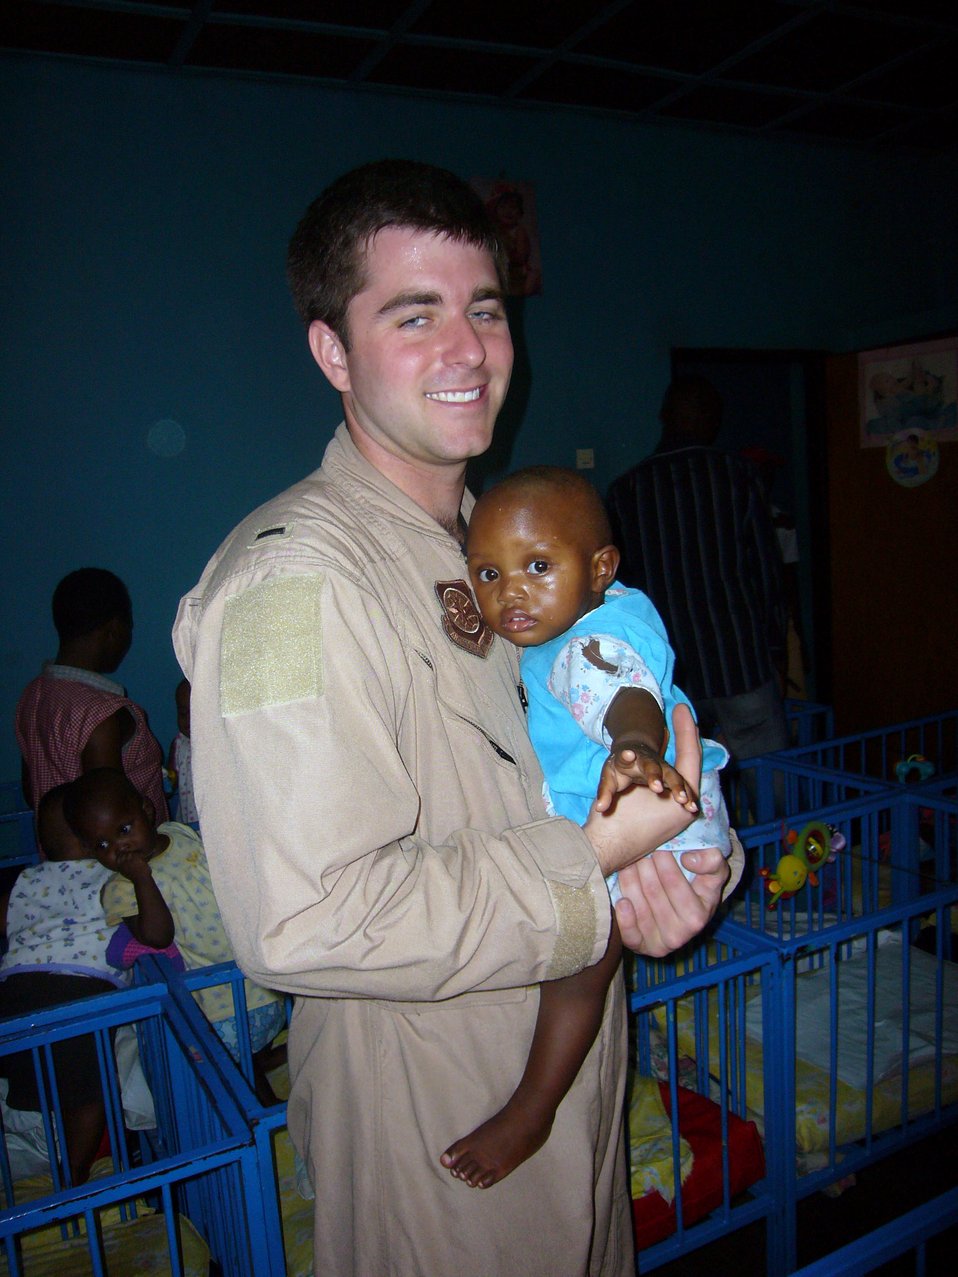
Airmen deliver donations to Rwandan orphanage

1st Lt. Andy Conwell, 786th Air Expeditionary Squadron C-17 pilot, holds a baby at an orphanage in Kigali, Rwanda, Oct. 27. Lieutenant Conwell was part of a group of Airmen who visited the orphanage and donate items for the children.